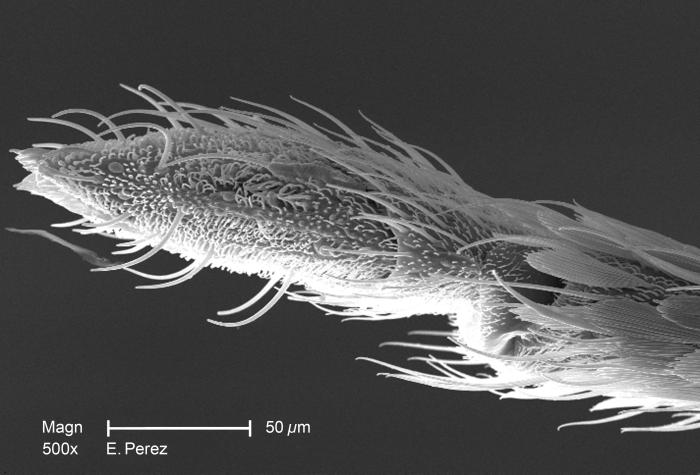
Magnified 500X, this scanning electron micrograph (SEM) revealed some of the minute exoskeletal details found at the proboscis tip of an unidentified mosquito found deceased in the suburbs of Decatur, Georgia. The proboscis is the organ used by this, as well as other like insects, to feed upon the blood of a warm-blooded host, including human beings. What you see here, is the sheath that encases a pair of needle-sharp "stylets", which together are known as the "fascicle". The larger of the two stylets, known as the "labrum", when viewed in cross-section, takes on the shape of a "V", and acts as a gutter, which directs the ingested host blood towards the insect's mouth. The 'hair-like' structures are known as "setae", and are really extensions of the insect's exoskeletal, chitinous covering. These setae act as sensory organs, transmitting impulses indicating changes in the organism's environment.